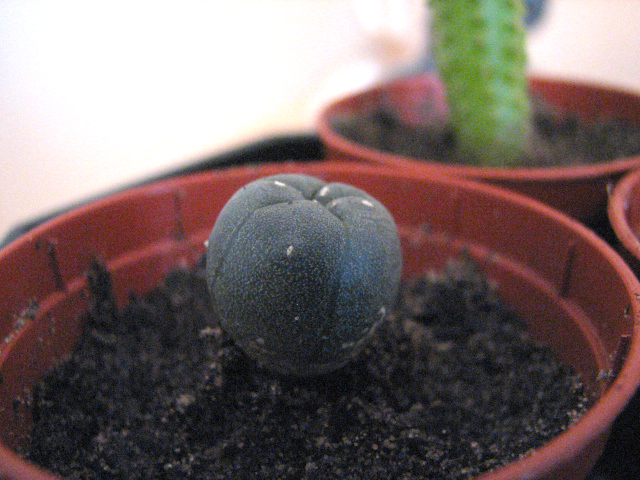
Baby Peyote plant